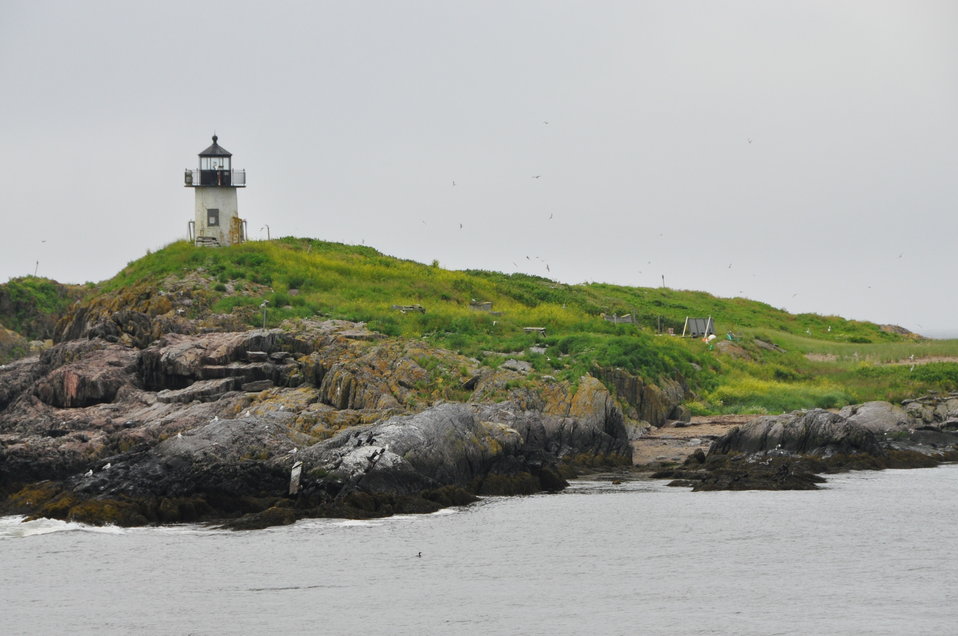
August 2009, The fog finally lifted off of Popham Beach, Phippsburg, Maine

At about 6:30 a.m. the fog finally began to lift enough for us to spot a few seals playing at the mouth of the Kennebec River and near Seguin Island shown here.